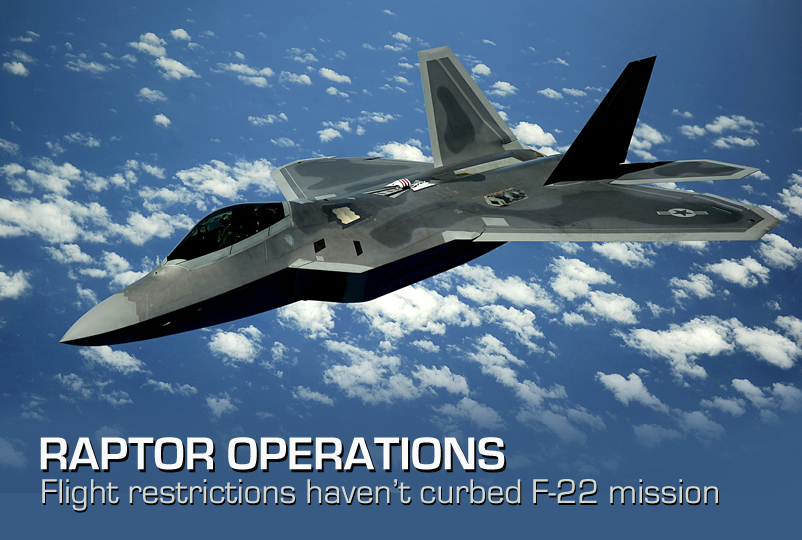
Raptor Ops